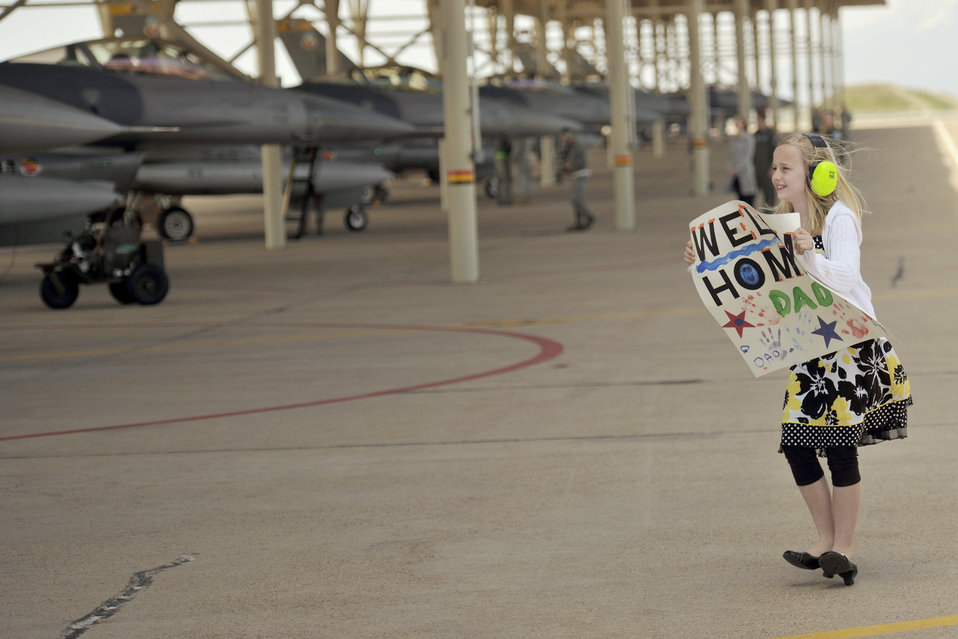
Airmen arrive

Cori Bailey awaits her father's arrival during a welcome-home ceremony April 15, 2011, at Hill Air Force Base, Utah. Cori is the 10-year-old daughter of Col. William Bailey, the 4th Fighter Squadron commander and an F-16 Fighting Falcon pilot. Colonel Bailey led six jets as the first of a team returning from a six-month deployment to Bagram Air Base, Afghanistan.